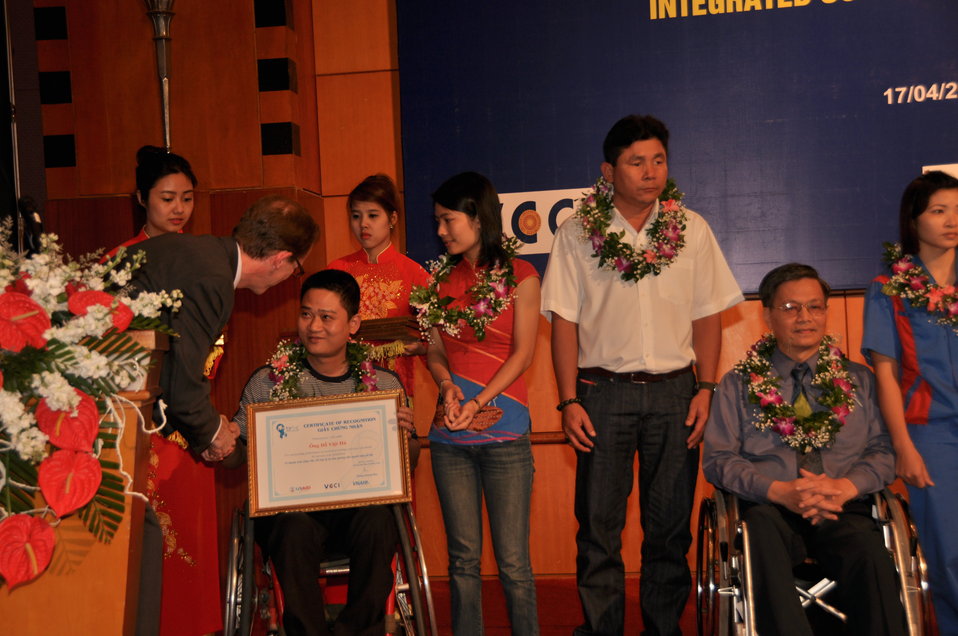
DSCBlue Ribbon Employer Council Awards for Hiring Vietnamese with Disabilities 1109

Hanoi, April 17, 2013